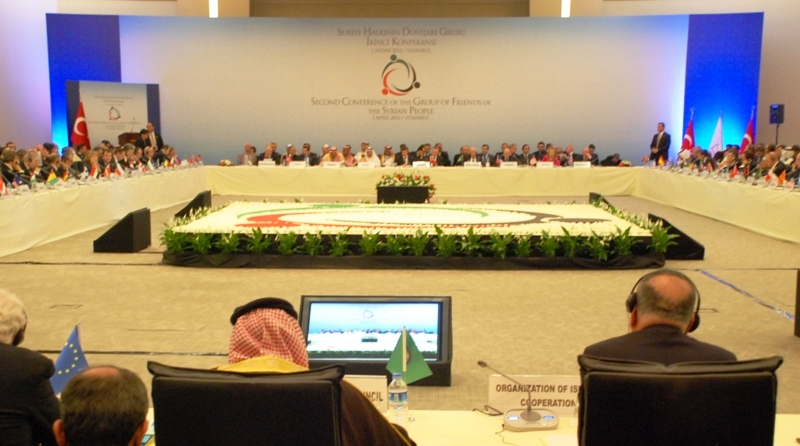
Friends of the Syrian People Meeting in Turkey

U.S. Secretary of State Hillary Rodham Clinton attends the Second Conference of the Group of Friends of the Syrian People at the Istanbul Congress Center in Istanbul, Turkey, April 1, 2012.